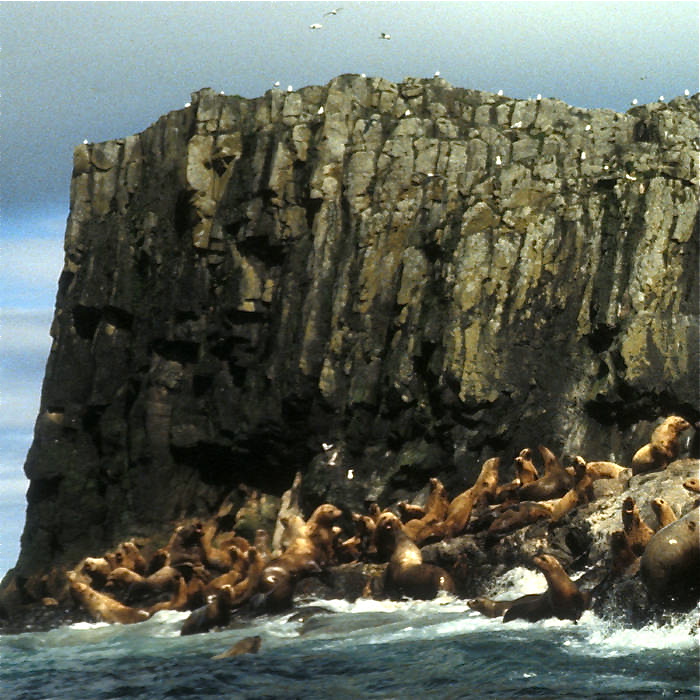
Alugunak Pinnacles

Alaska Maritime National Wildlife Refuge